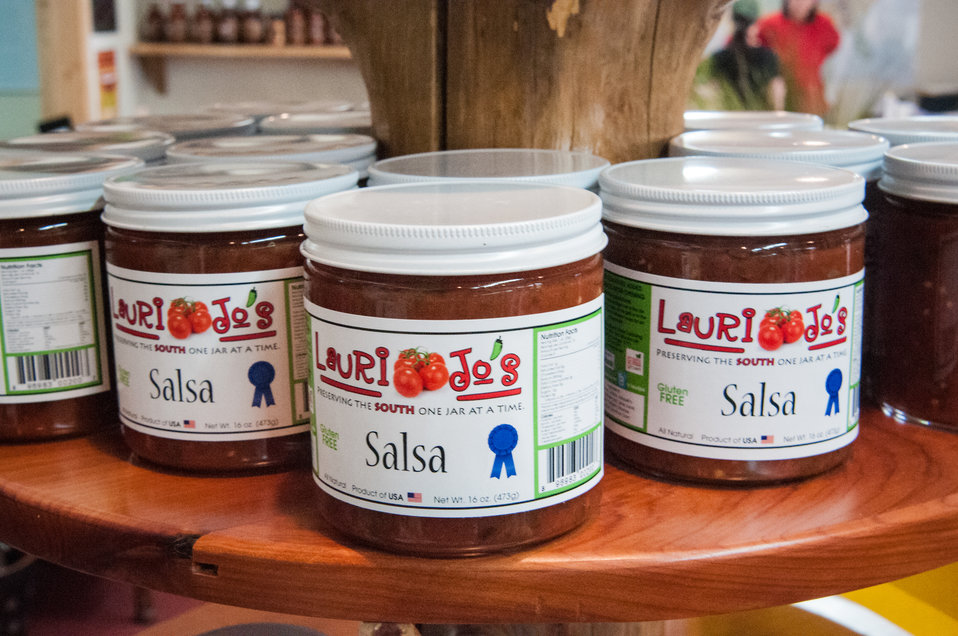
Jars of Lauri Jo’s Salsa sit on the shelf at Laurie Jo’s Southern Style Canning business in Norman Park, Colquitt County, GA on Mar. 7, 2013. The business has increased its production to 12 items that now includes pickled green tomatoes, pickled okra, pickled asparagus pickled green beans, red and green pepper jellies, pineapple pepper jelly salsa and pepper sauce. Consumers may now purchase Lauri Jo’s Southern Style Canning Line in Whole Foods, Earth Fare and Kroger stores across 20 states. Lauri Jo Bennett applied for a U.S. Department of Agriculture (USDA) Rural Development (RD) Rural Business Enterprise Grant (RBEG) to help market her products. The grant from USDA has enable Lauri Jo to employ 26 people. The USDA Strike Force Initiative has designated Colquitt County, GA as a Strike Force county selected to receive assistance to relieve persistent poverty in historically high-poverty counties.